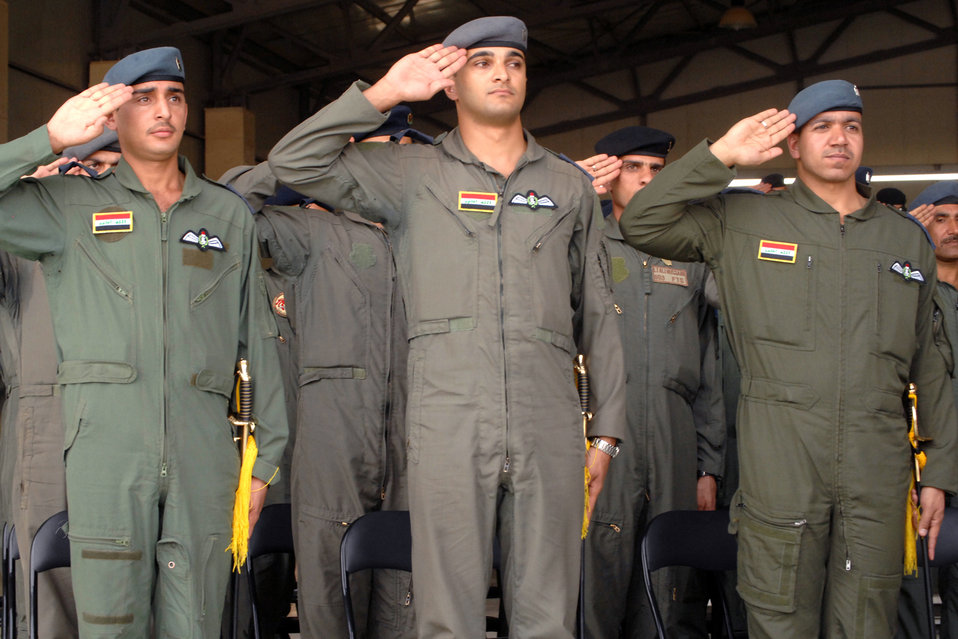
Iraqi air force pilots take flight into history

Iraqi air force 2nd Lts. Habeeb, Majid and Hassan salute during the Iraqi national anthem at their graduation ceremony from Iraq's only fixed-wing flight training school Oct. 13 at Kirkuk Regional Air Base, Iraq. One graduate plans to become an instructor pilot for the school, and another will fly a King Air twin-turboprop aircraft on operational missions. The third will travel to the United States to learn to fly the T-6 Texan.